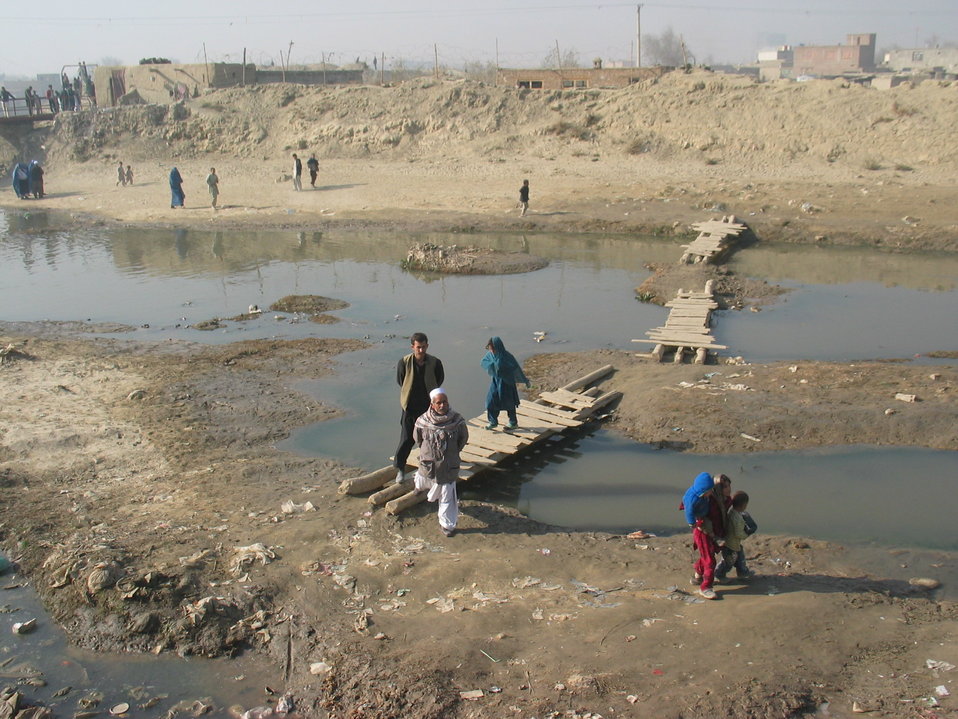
Kabul River Bridge Renovation, December 3, 2010